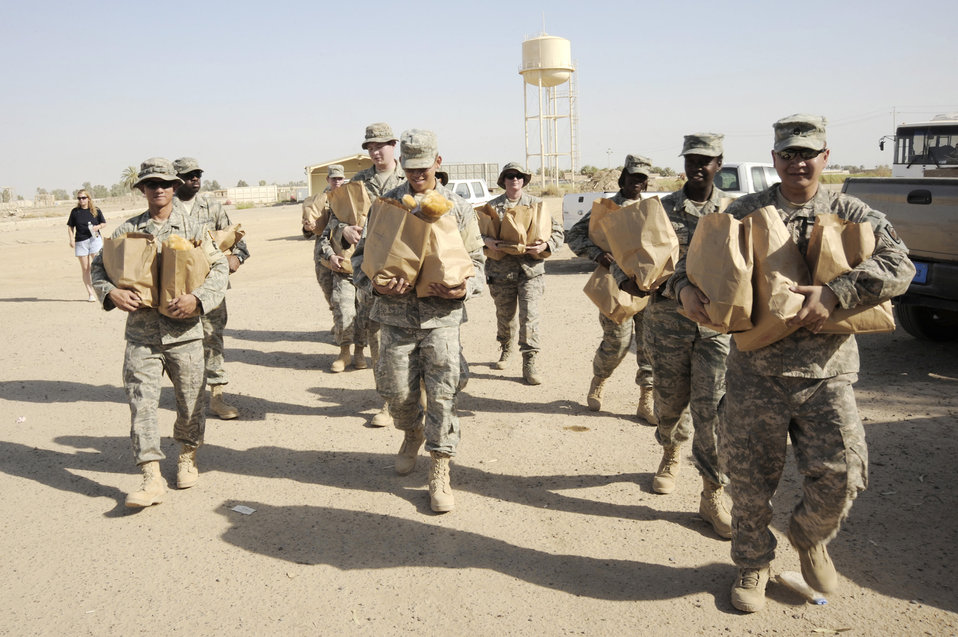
Airmen build ties with Iraqi families

Airmen and Soldiers prepare to deliver goods to local Iraqi families July 24 in Baghdad, as part of the Sather Air Base Good Neighbor Program. This program is made up of volunteers who make a trip once a month to distribute care packages to Iraqi families. The packages include items the Iraqi families may have a hard time getting otherwise, such as personal hygiene items, dry food, toys for children and snacks.